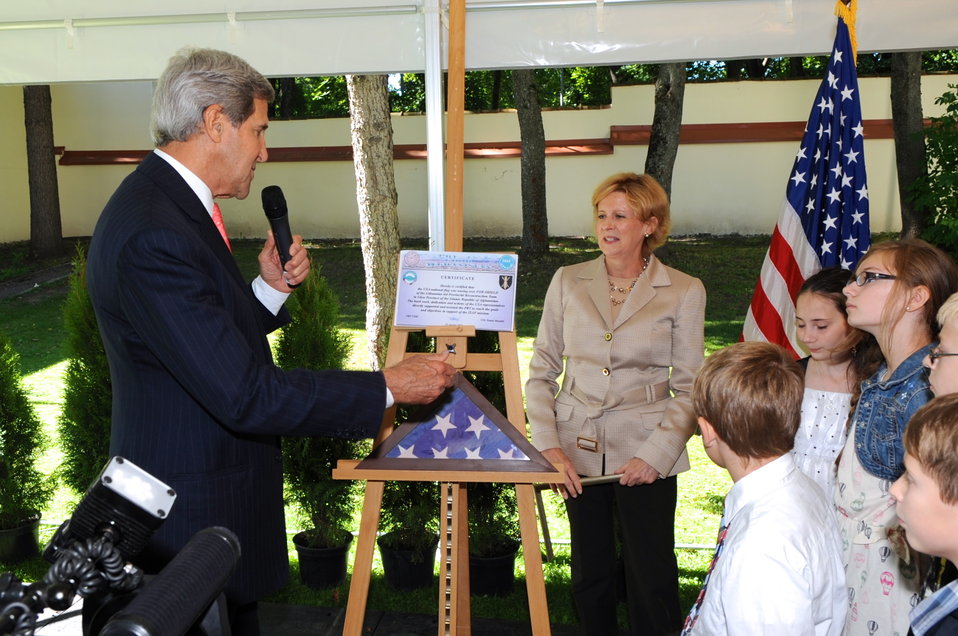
Secretary Kerry Unveils Flag that Flew Over Lithuanian PRT in Afghanistan

U.S. Ambassador to Lithuania Deborah McCarthy looks on as U.S. Secretary of State John Kerry unveils a flag that flew over a Lithuanian-led Provincial Reconstruction Team in Afghanistan during a visit to U.S. Embassy in Vilnius, Lithuania on September 7, 2013.